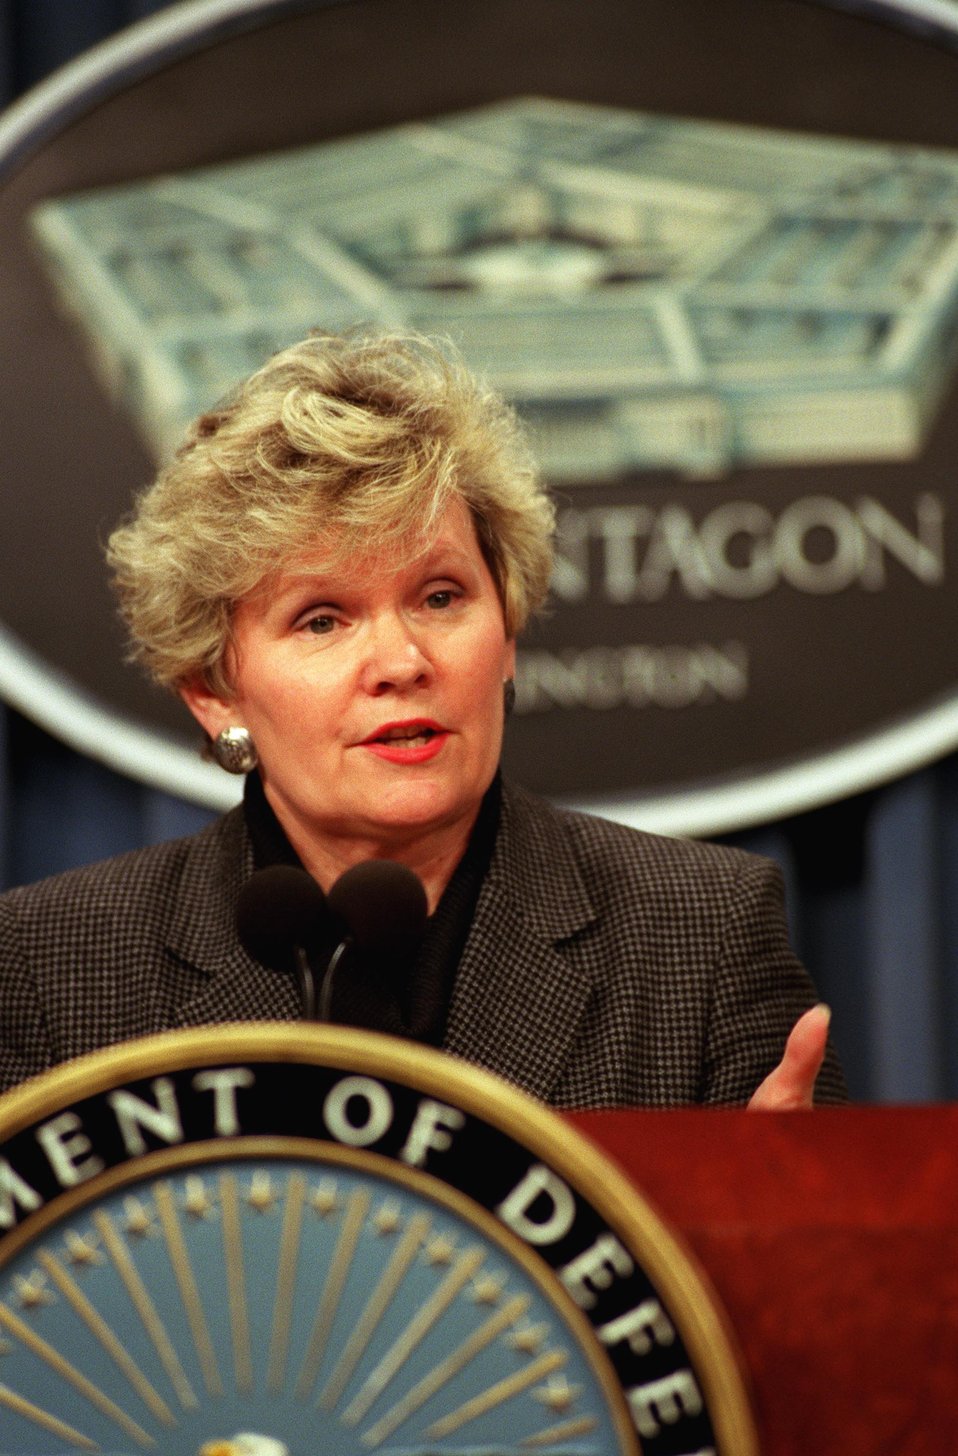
Payton appointed new Air Force executive for acquisition

Sue C. Payton has been appointed the new assistant secretary of the Air Force for acquisition. Ms. Payton has extensive experience in both industry and government acquisitions.